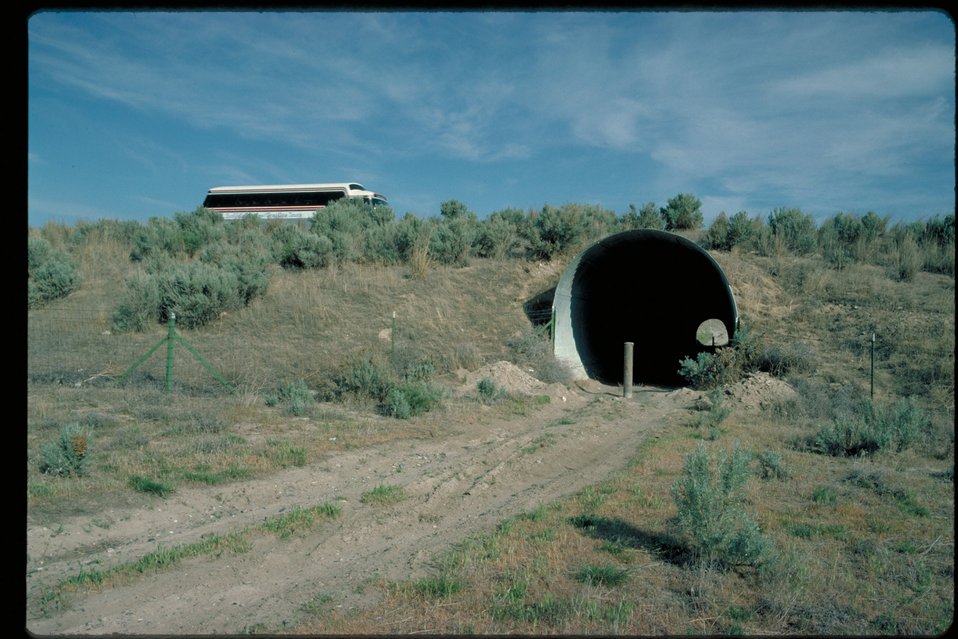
Oregon Trail Culvert near Glenns Ferry on I-84 Lower Snake River District